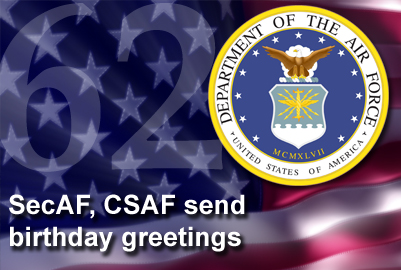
SecAF, CSAF send birthday greetings

In a joint Letter to Airmen, Secretary of the Air Force Michael Donley and Air Force Chief of Staff Gen. Norton Schwarz send birthday greetings to the total force.